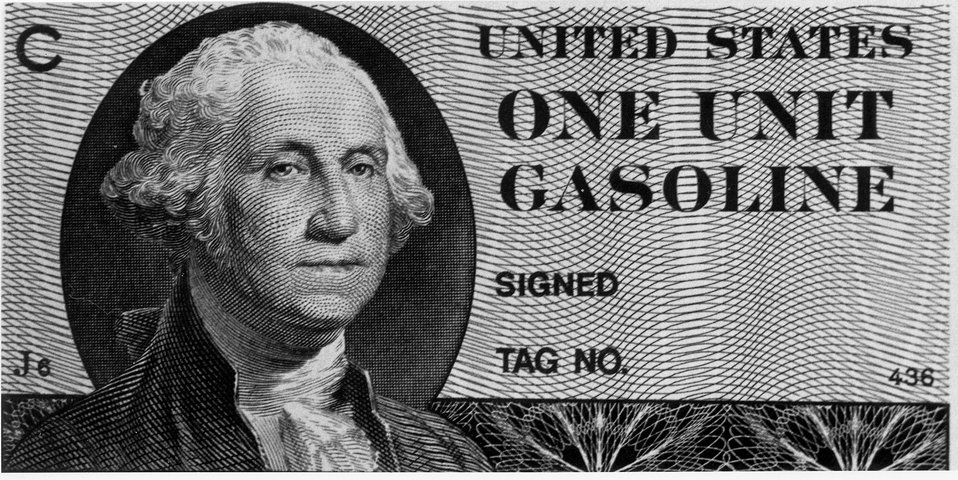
Gasoline ration coupon